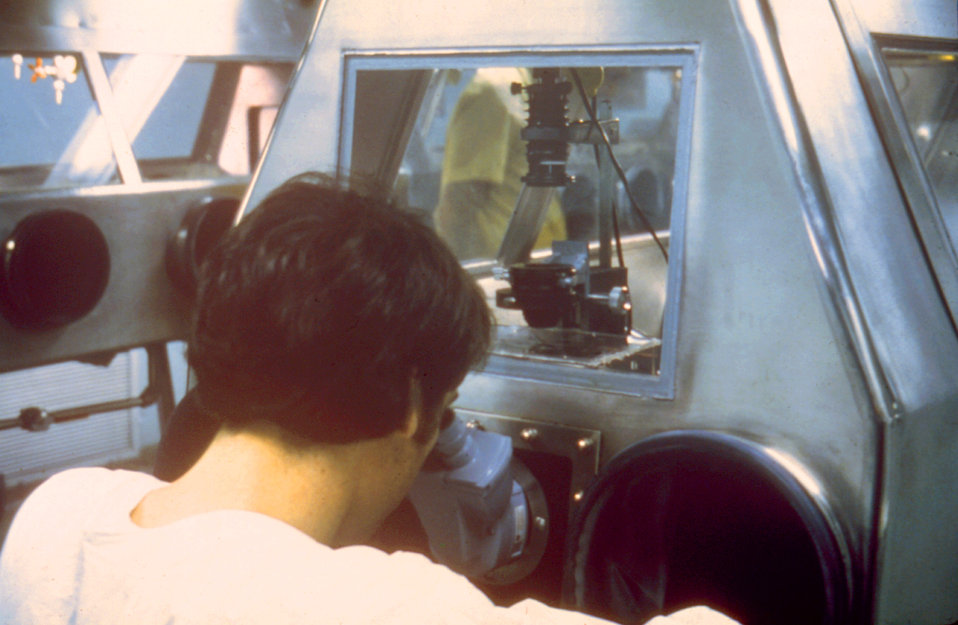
This scientist is working at a microscope sealed in a cabinet line within the Maximum Containment Lab.